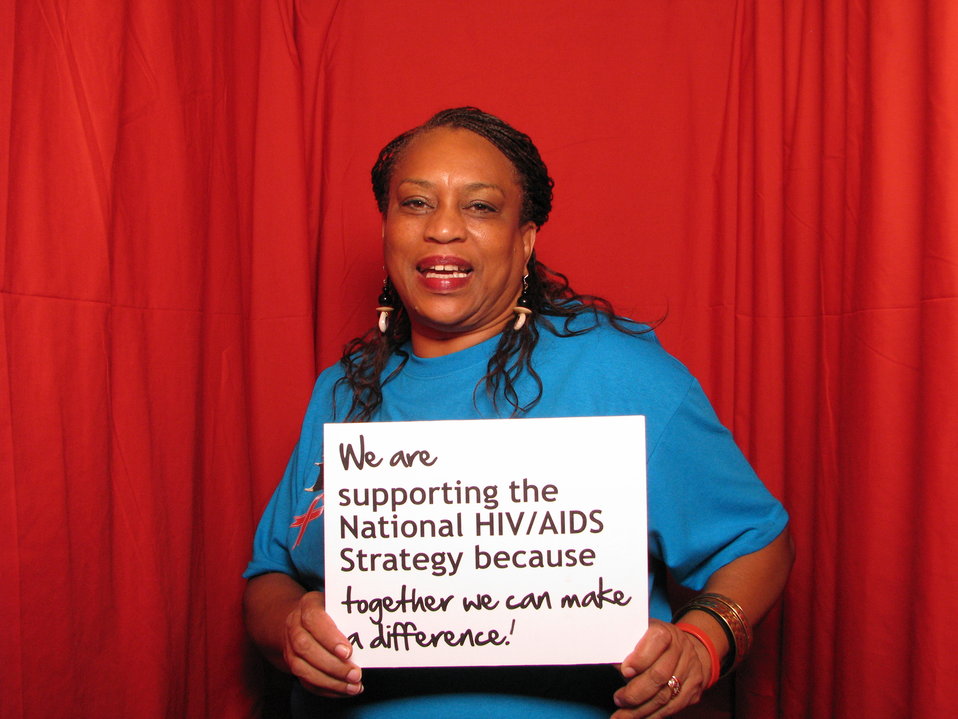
We are supporting the National HIV/AIDS Strategy because together we can make a difference!

From the AIDS.gov photo booth at the U.S. Conference on AIDS, September 2010 (Orlando, FL).